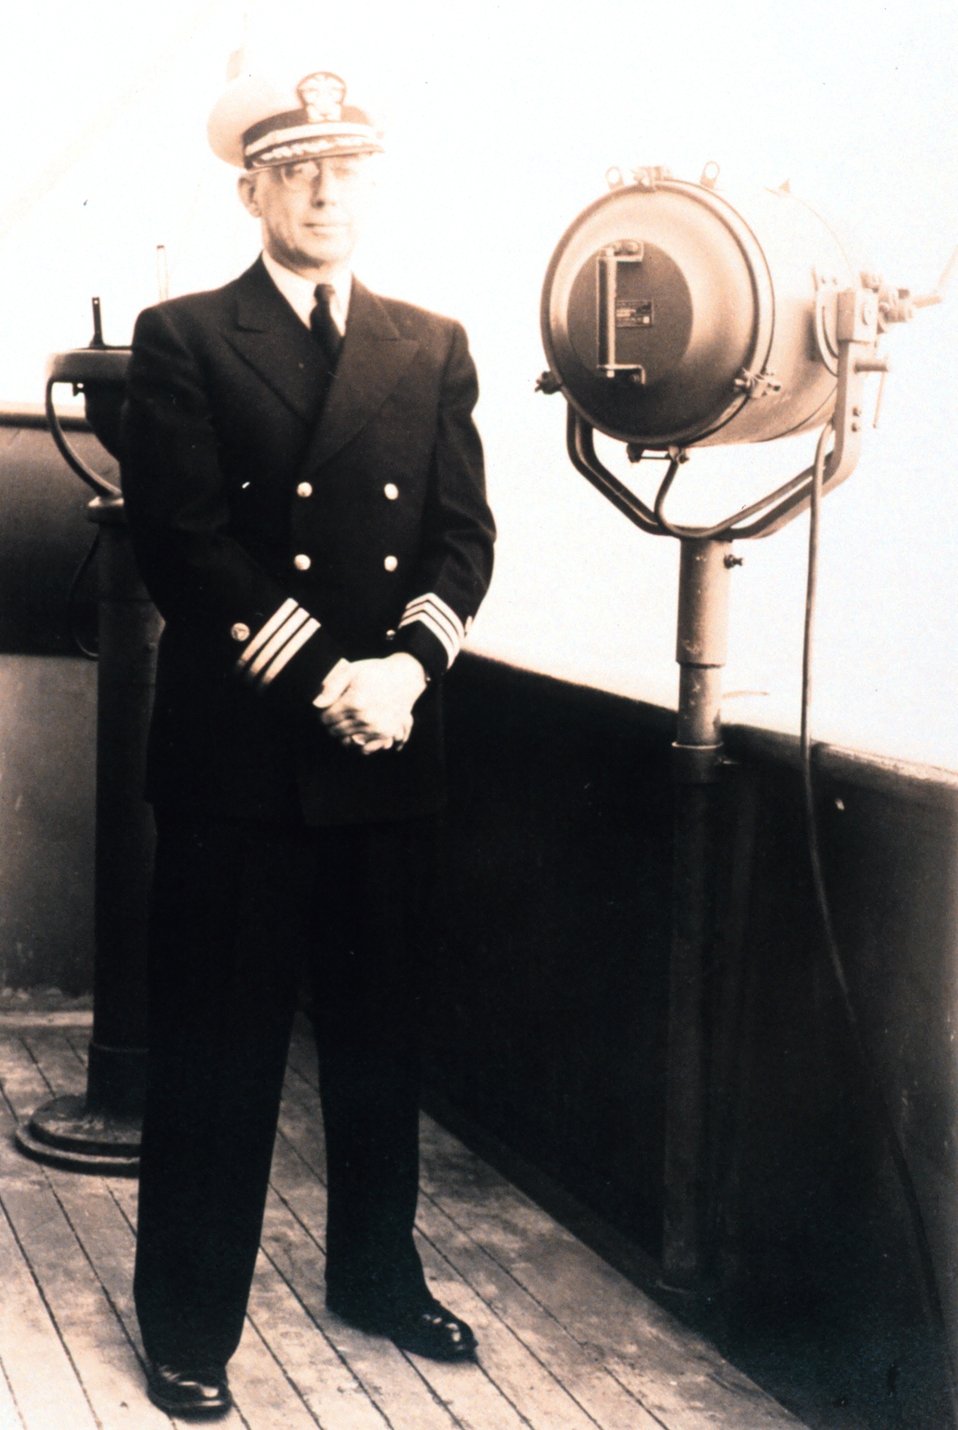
John Fleming.